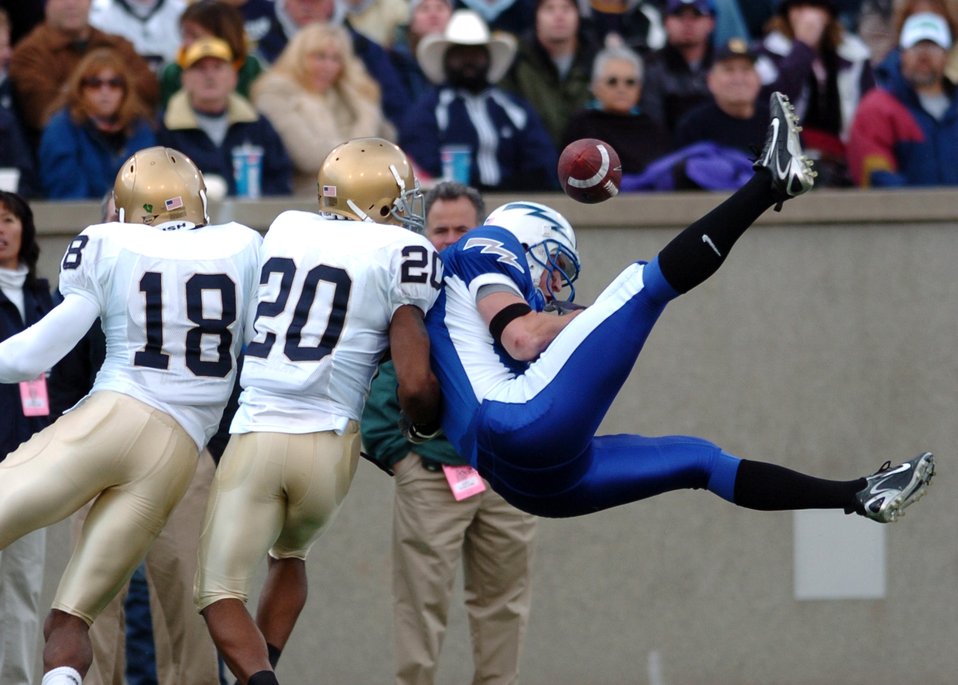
Trick Play

Air Force receiver Mark Root is unable to bring down a throw from halfback Justin Handley on a trick play against Notre Dame Saturday. Despite 205 yards in the air and 2 touchdowns, the Falcons were outmatched by 8th-ranked Notre Dame, 39-17.